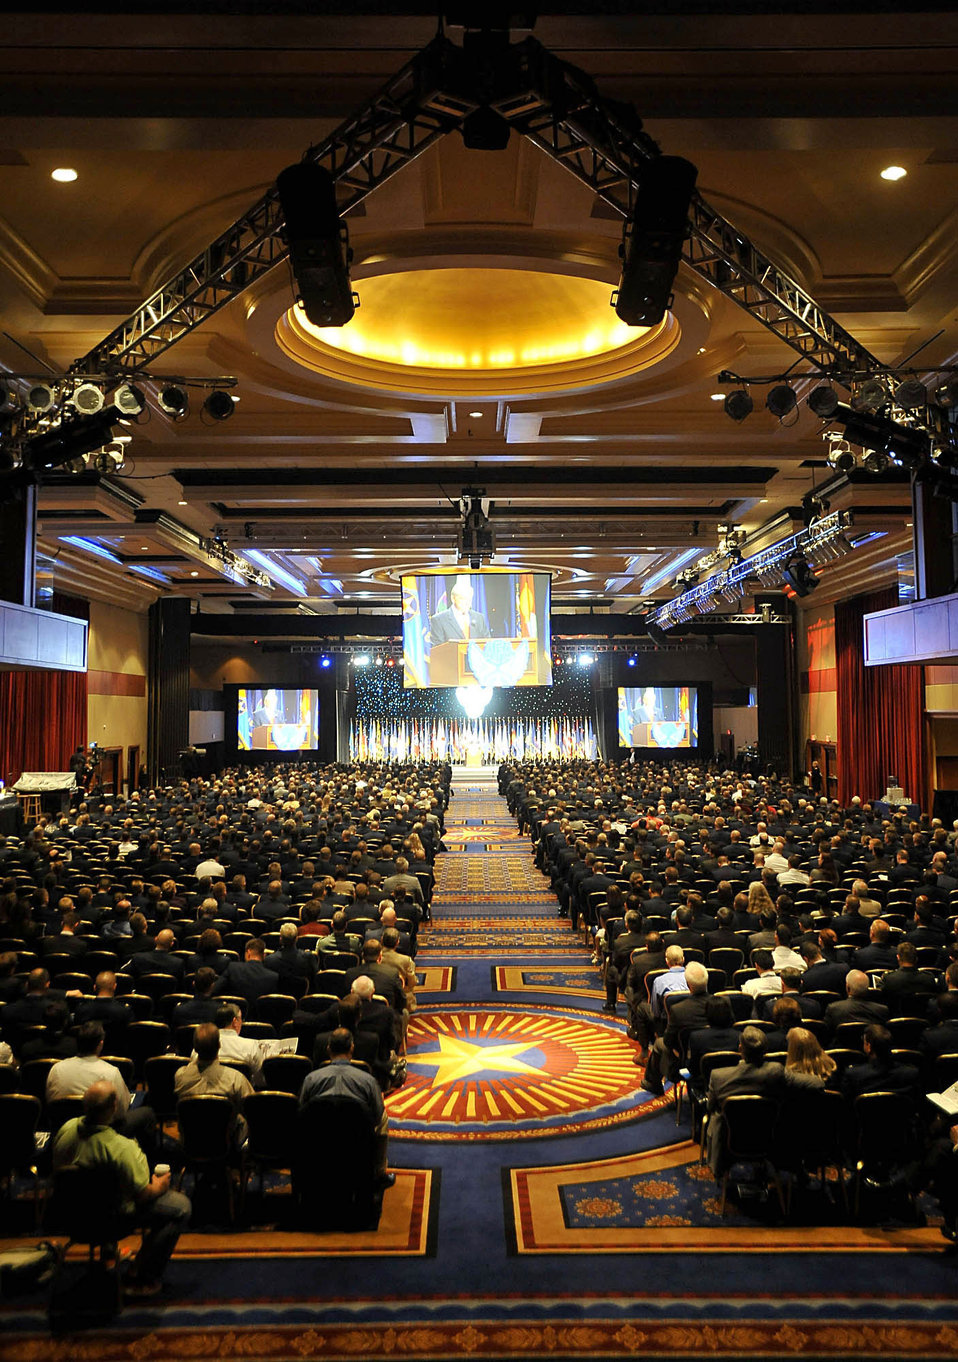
Acting Secretary Donley speaks at AFA conference

More than 1,000 Air Force members listen to Bob Largent, Air Force Association's chairman, speak during the 2008 AFA Air & Space Conference and Technology Exposition Sept. 15, in Washington's Marriott Wardman Park Hotel.